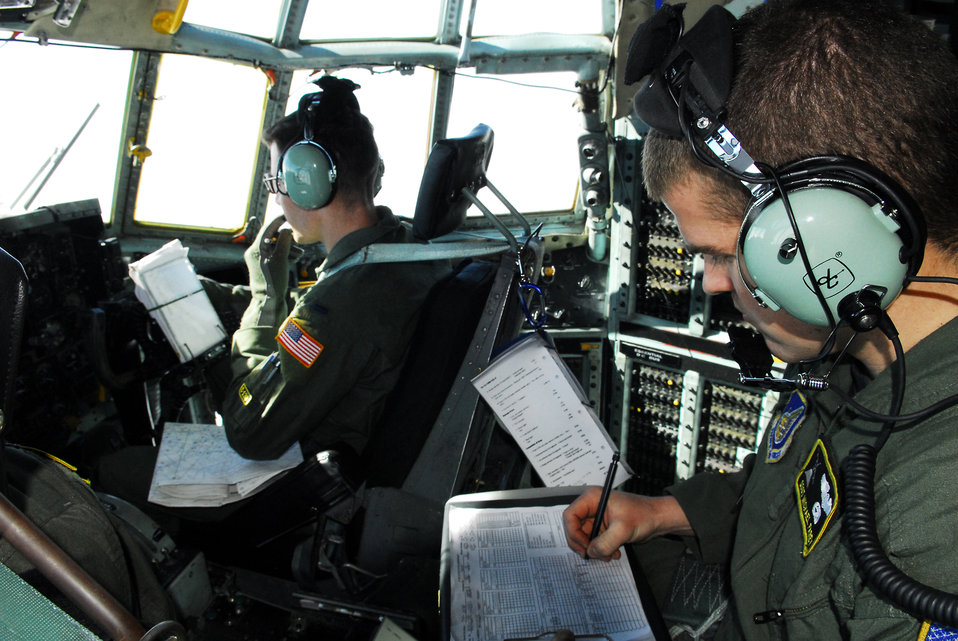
Delivering relief supplies

1st Lt. Christopher Baisch (left) and Staff Sgt. Michael Farey discuss flight information during a mission March 29, 2011, above Japan. Baisch is a C-130 Hercules pilot and Farey is a flight engineer. Both are assigned to the 36th Airlift Squadron at Yokota Air Base, Japan.